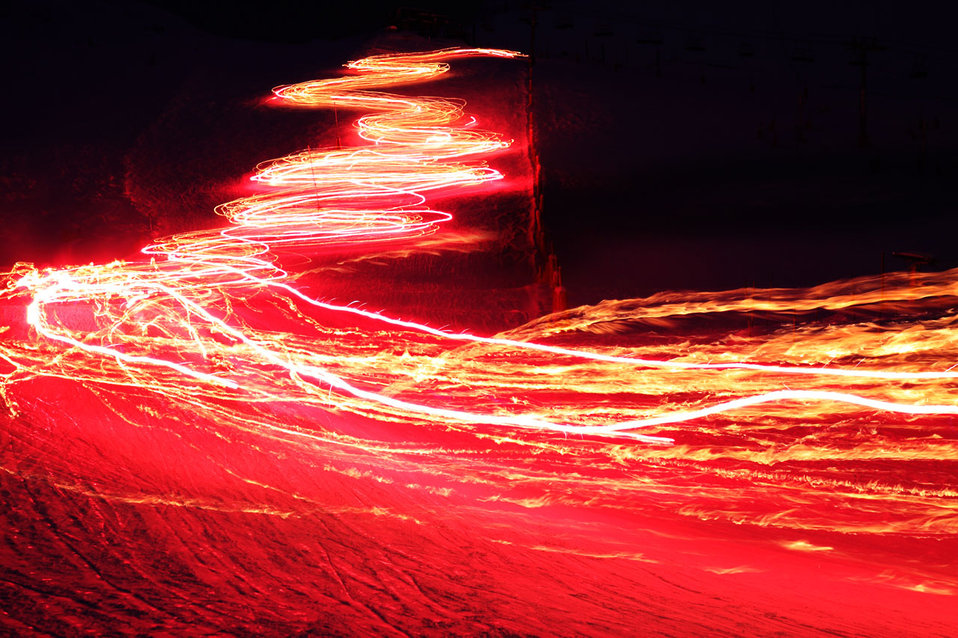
Light trails

Torch light trails created by skiers.